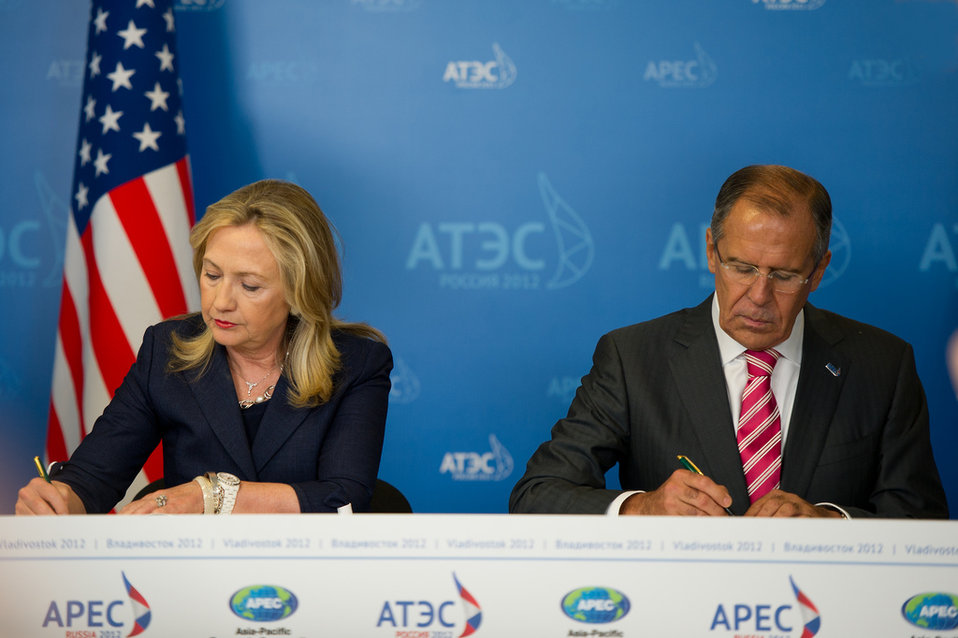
Secretary Clinton and Russian Foreign Minister Lavrov Participate in a Signing Ceremony

U.S. Secretary of State Hillary Rodham Clinton participates in a Signing Ceremony with Russian Foreign Minister Sergey Lavrov during the Asia-Pacific Economic Cooperation Leaders' Week in Vladivostok, Russia, September 8, 2012.